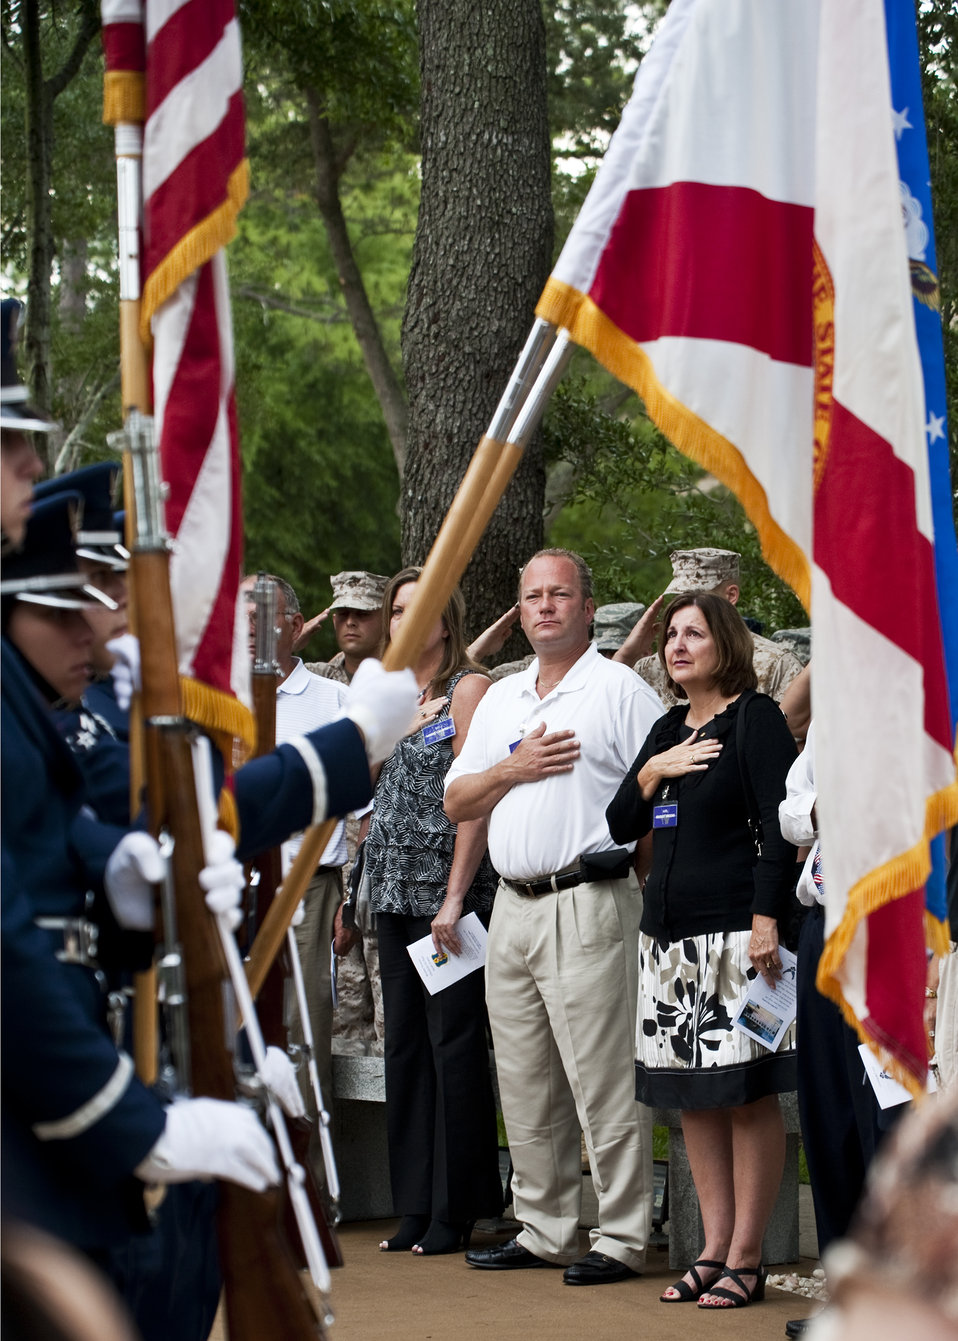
Khobar Towers memorial

Family members of victims of the Khobar Towers bombing watch as the colors are presented at the Khobar Towers Memorial ceremony June 24, 2011, at Eglin Air Force Base, Fla. June 25 marks the 15th anniversary of the bombing.